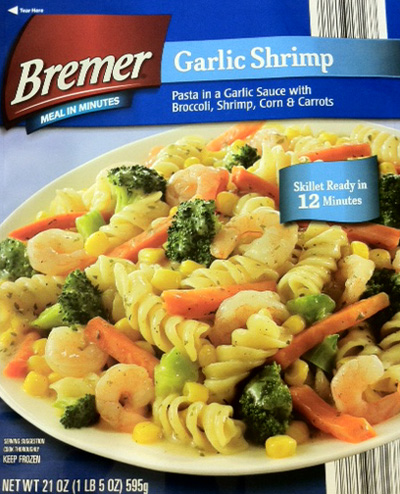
RECALLED - Garlic Shrimp Skillet Meal

November 7, 2013 – Product Recall – Gourmet Express LLC. Voluntarily Recalls 32 Ounce Packages of 'Fusia Chicken Lo Mein' and 21 Ounce Packages Of “Bremer 3 Cheese Chicken” and “Bremer Garlic Shrimp' Due to Possible Undeclared Eggs.